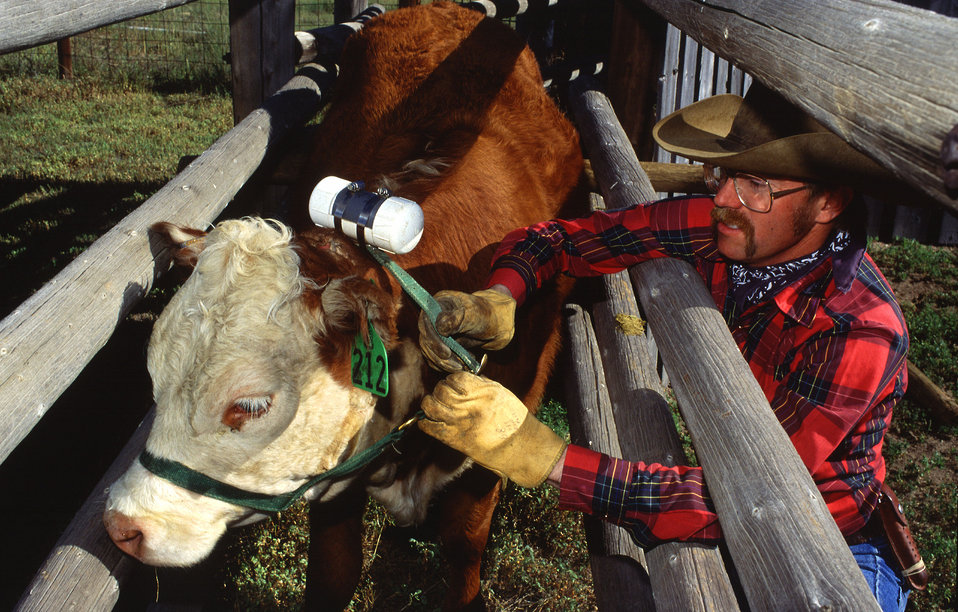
U.S. Department of Agriculture (USDA) Agricultural Research Service (ARS) technician Jeff Thomas attaches a sensing unit that records motion and other data so scientists can determine how much time this steer spends grazing each day.